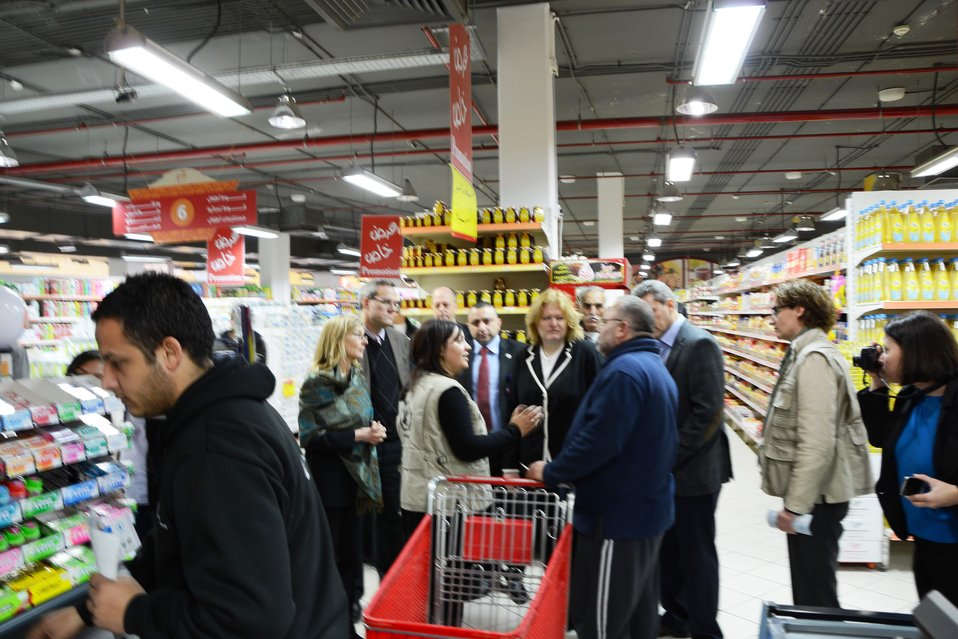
Assistant Secretary Richard and USAID Deputy Administrator Lindborg Visit a World Food Programme Distribution Center in Amman

Assistant Secretary of State for Population, Refugees, and Migration Anne C. Richard and USAID Assistant Administrator for Democracy, Conflict, and Humanitarian Assistance Nancy Lindborg visit a World Food Programme Distribution Center in Amman, Jordan, where refugees living in host communities receive vouchers on January 27, 2013. They can use these vouchers to shop for their families in local supermarkets.